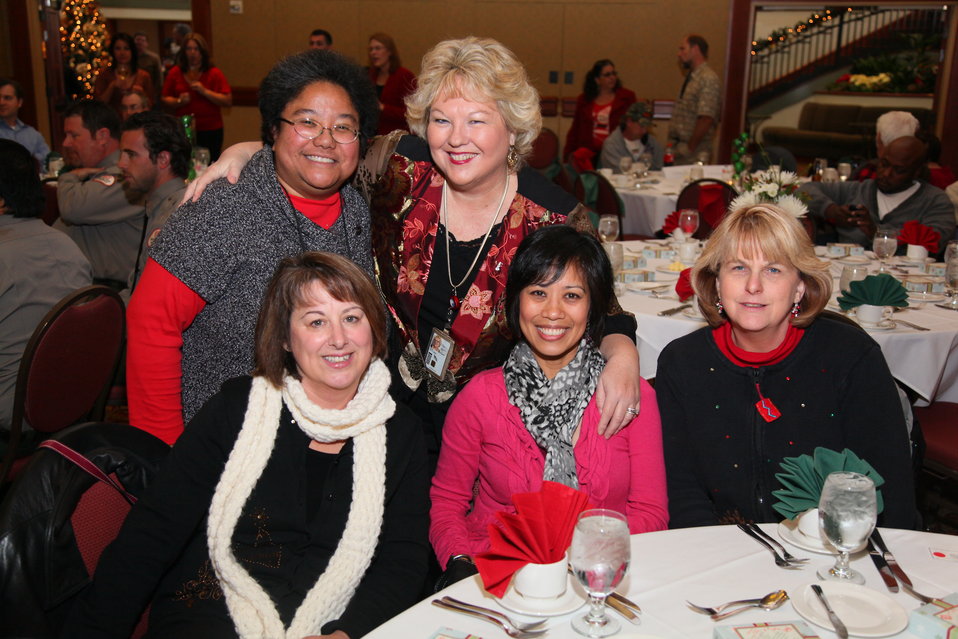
Sacramento District Holiday Party 2011